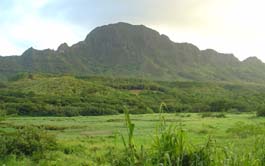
Hanalei NWR

The flat river valley, with the Hanalei River flowing through it, comprises the Hanalei NWR on the Northwest corner of the Island of Kaui.